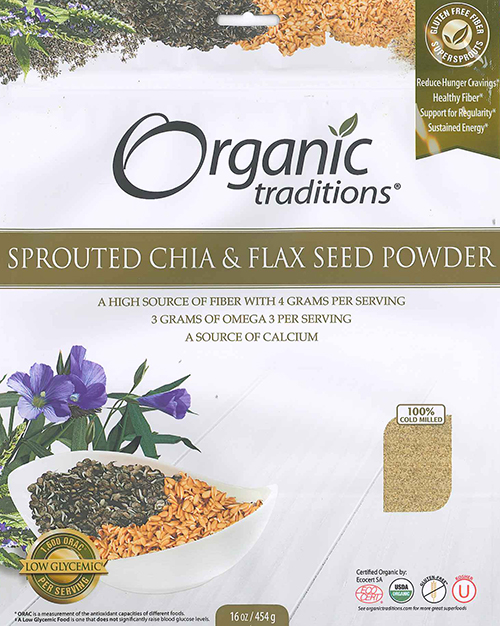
RECALLED – Chia and Flax seed powder

June 4, 2014 – Product Recall – Health Matters America, Inc, Recalls Organic Sprouted Chia Seed Powder and Sprouted Chia/flax Seed Powder Due to Possible Health Risk.